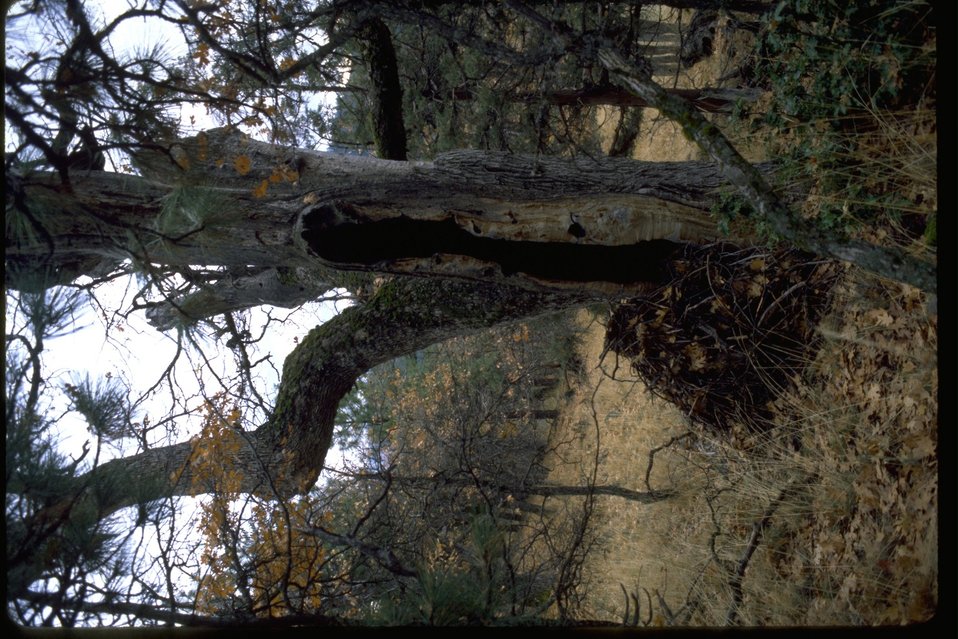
Quagar with woodrat nest at Oregon Gulch RNA.